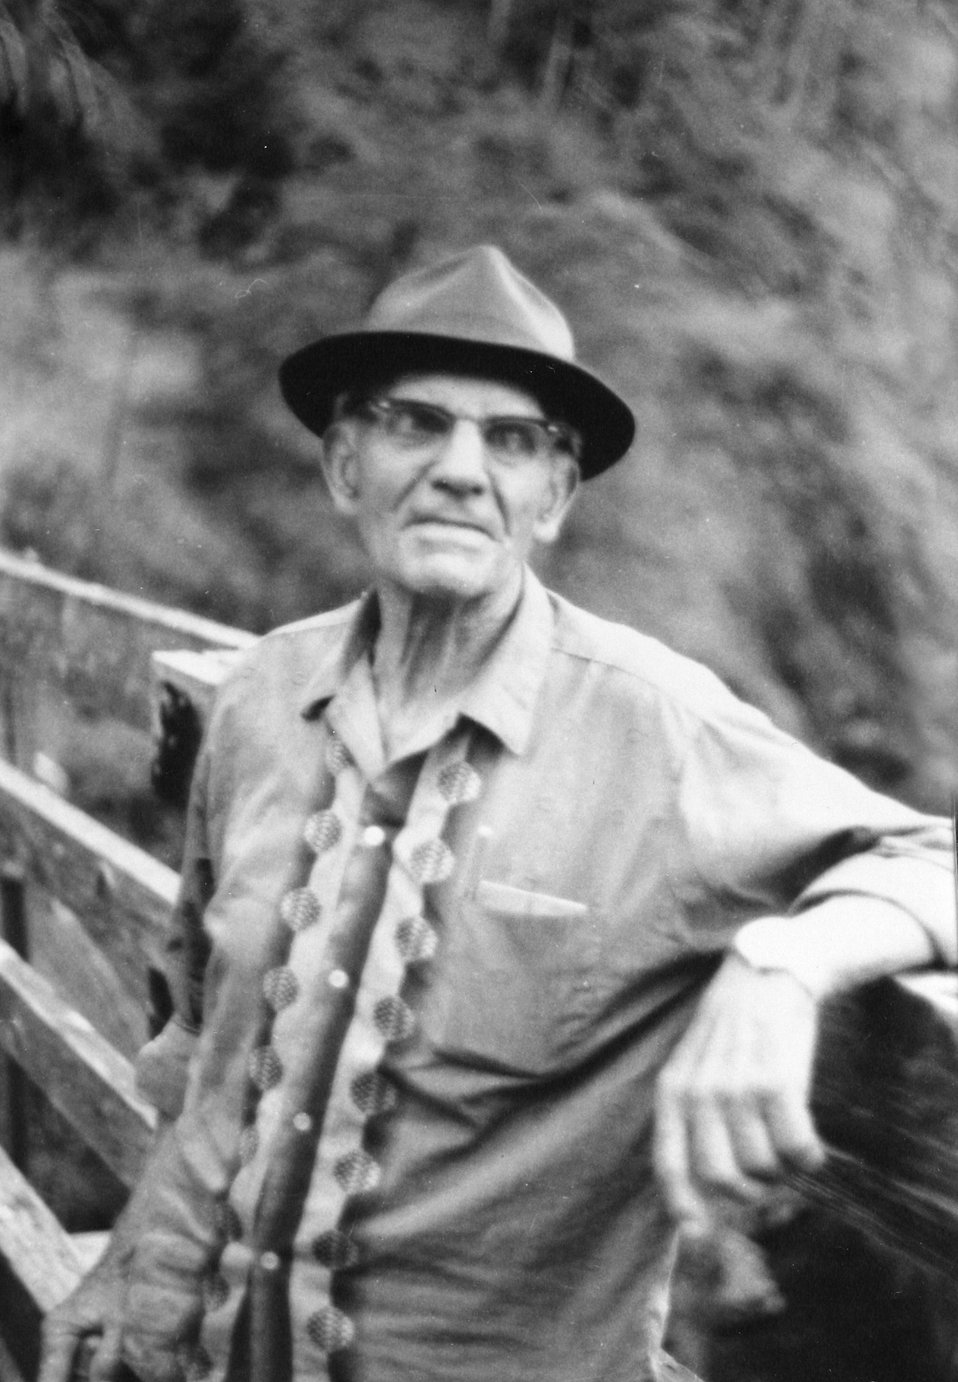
Ivin Billings at Mule Creek